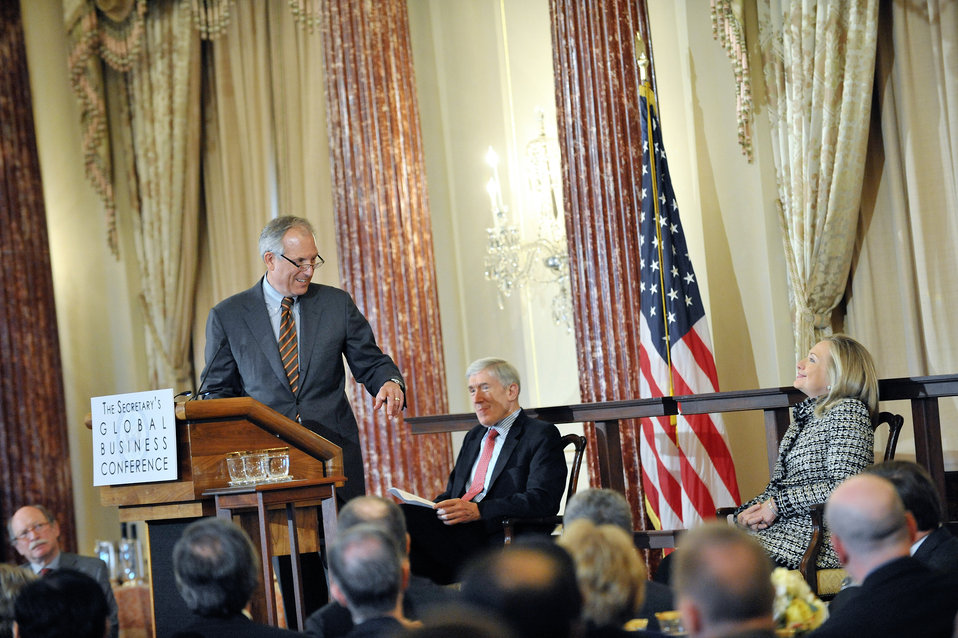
Boeing Chairman, President, and CEO McNerney, Jr. Delivers Remarks

Boeing Company Chairman, President, and CEO W. James McNerney, Jr. delivers remarks at the first-ever State Department Global Business Conference at the U.S. Department of State in Washington, D.C., on February 21, 2012. Also pictured: Secretary of State Hillary Rodham Clinton and Under Secretary of State for Economic Growth, Energy, and the Environment Robert Hormats.